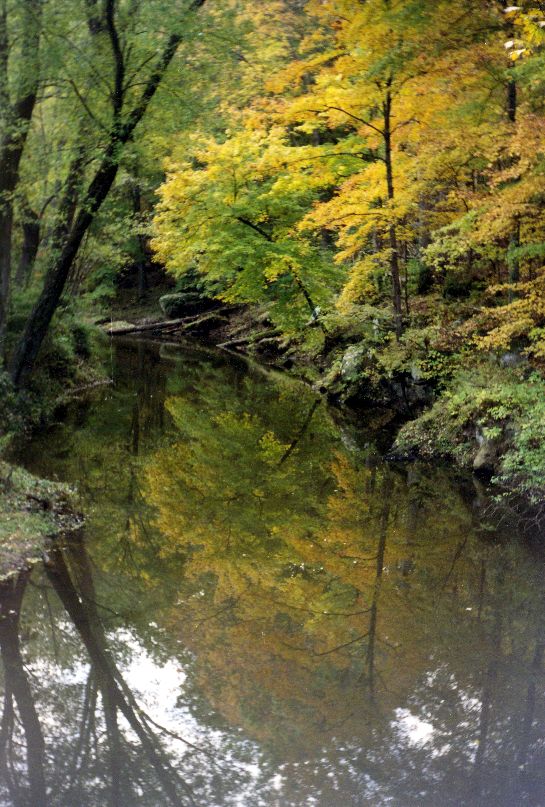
IL - Grassy Creek, Crab Orchard National Wildlife Refuge